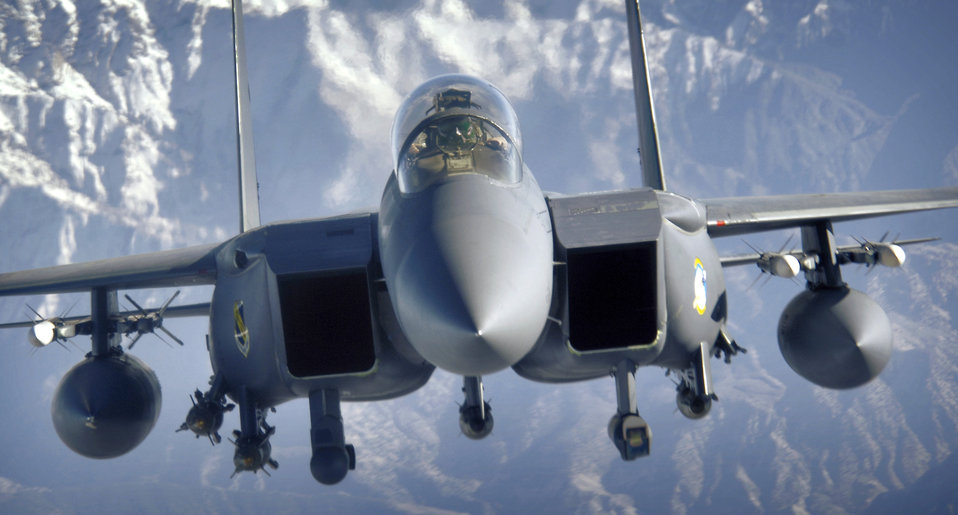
Operation Mountain Lion roars

An F-15E Strike Eagle soars over the mountains of Afghanistan in support of Operation Mountain Lion on Wednesday, April 12, 2006. The crew and fighter are deployed to the 336th Expeditionary Fighter Squadron in Southwest Asia from the 4th Fighter Wing at Seymour Johnson Air Force Base, N.C.